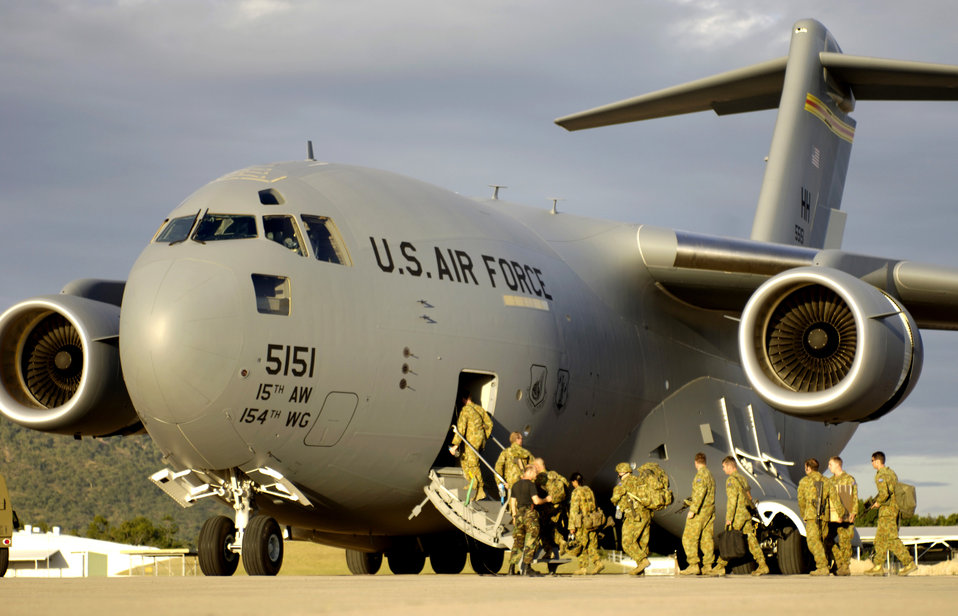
Combat Mobility Element moves cargo quickly, safely

Australian Defense Forces board a C-17 Globemaster III at Royal Australian Air Force Base Townsville, Australia, on Tuesday, May 30, 2006. Two C-17s from the 15th Airlift Wing and the Hawaii Air National Guard's 154th Wing at Hickam Air Force Base, Hawaii, are helping the Australian Defense Force reposition its forces in Australia to better support peace operations in East Timor.